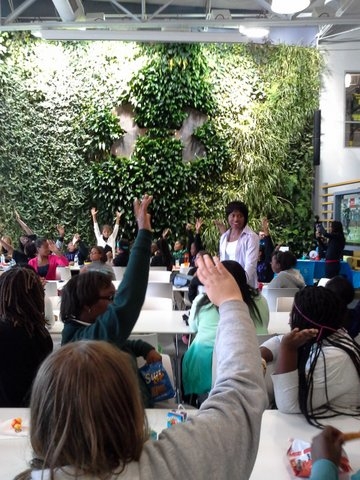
Sept 14 2013 Girls in STEM Summit

Director Dot Harris speaks to middle and high school girls in Baltimore at the Girls in STEM Summit this Sept.